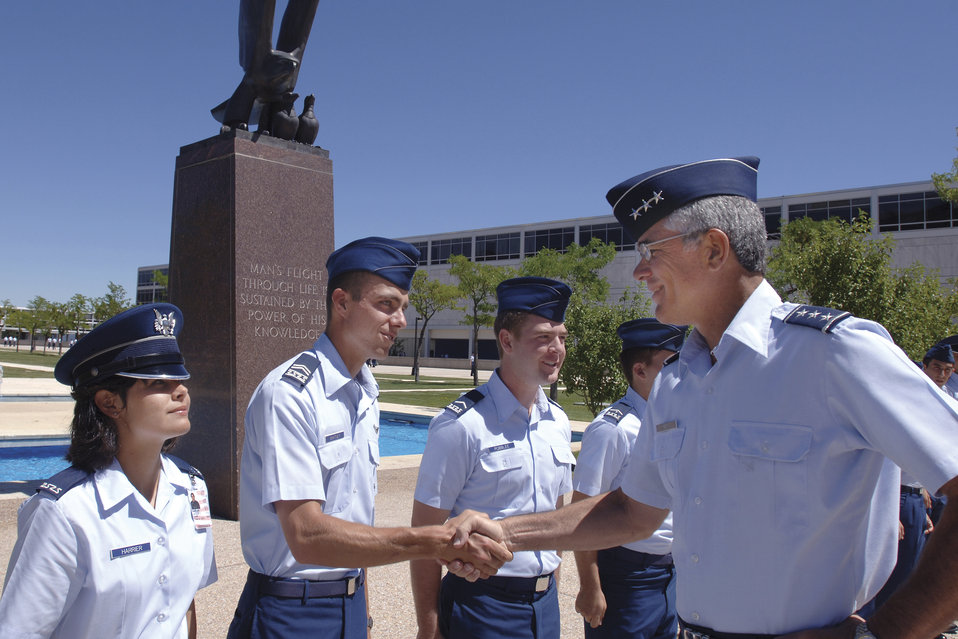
Academy superintendent to retire

Lt. Gen. John Regni, the Air Force Academy's superintendent, greets cadets. General Regni will retire from active duty later this year. He is the Academy's 17th superintendent.